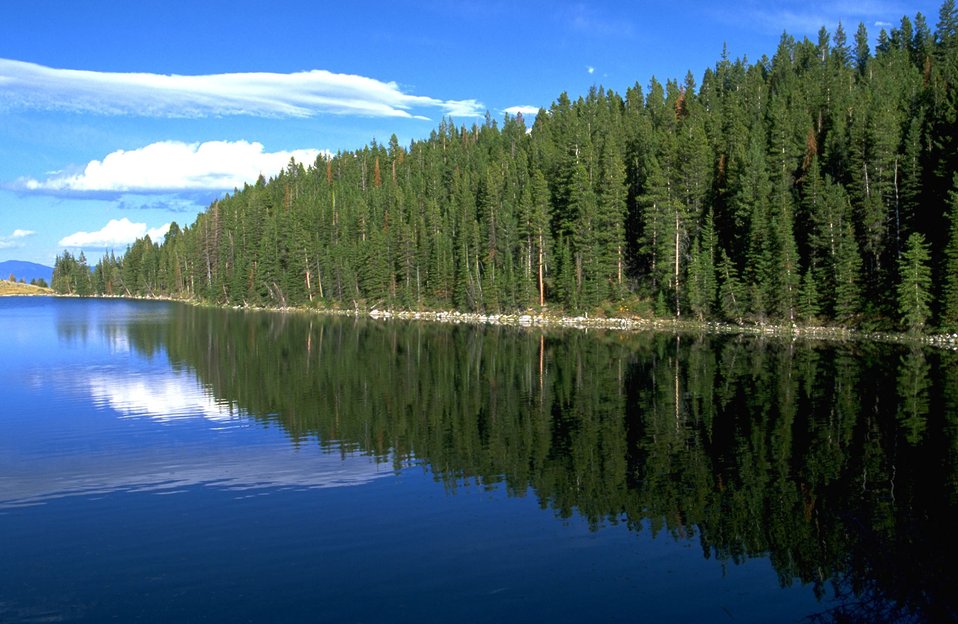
Trees reflecting on Axolotl Lake